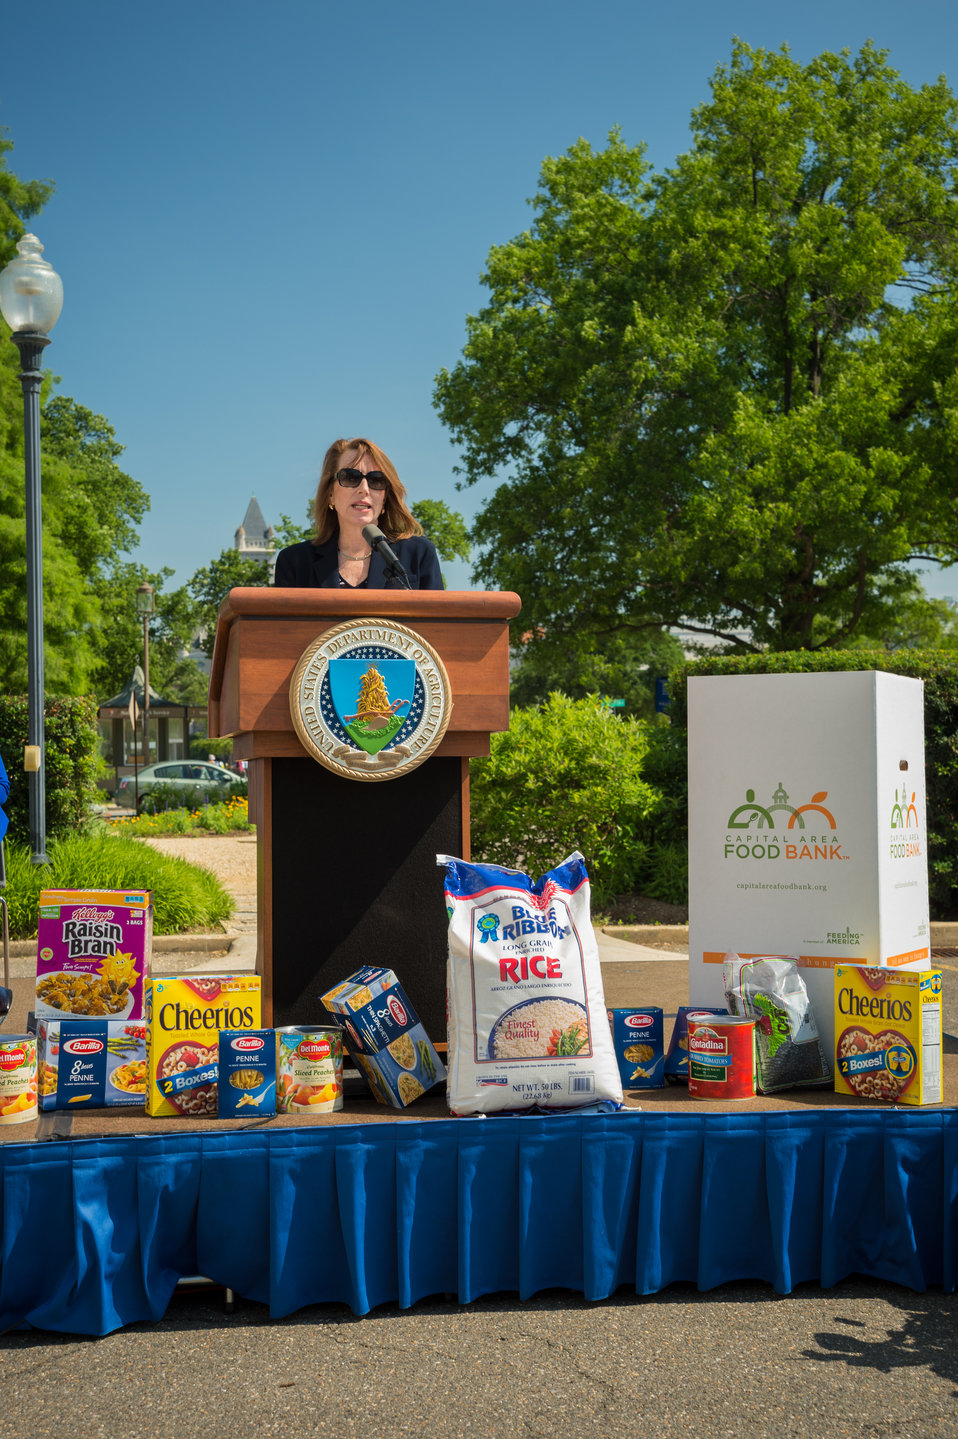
Nancy Roman, President and Chief Executive Officer, Capital Area Food Bank addressed the need for surplus food donations to assist those who suffer from hunger and educating the community about the issues of hunger and nutrition at the 2014 National Feds Feed Families Kick-Off at the United States Department of Agriculture’s (USDA's) People’s Garden in Washington, DC, Mon. Jun. 2, 2014.